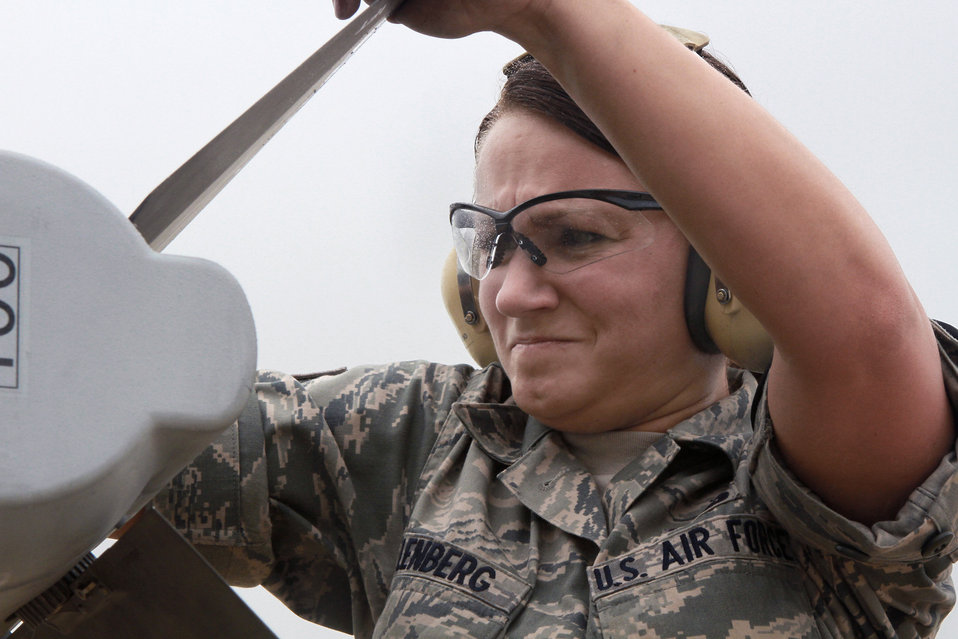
Weapons-loader competition

Senior Airman Kelly Eilenberg installs a fin on an advanced medium-range air-to-air missile June 12, 2011, during an annual load-crew competition at Egg Harbor Township, N.J. Airman Eilenberg is a weapons loader assigned to the New Jersey Air National Guard's 177th Fighter Wing.